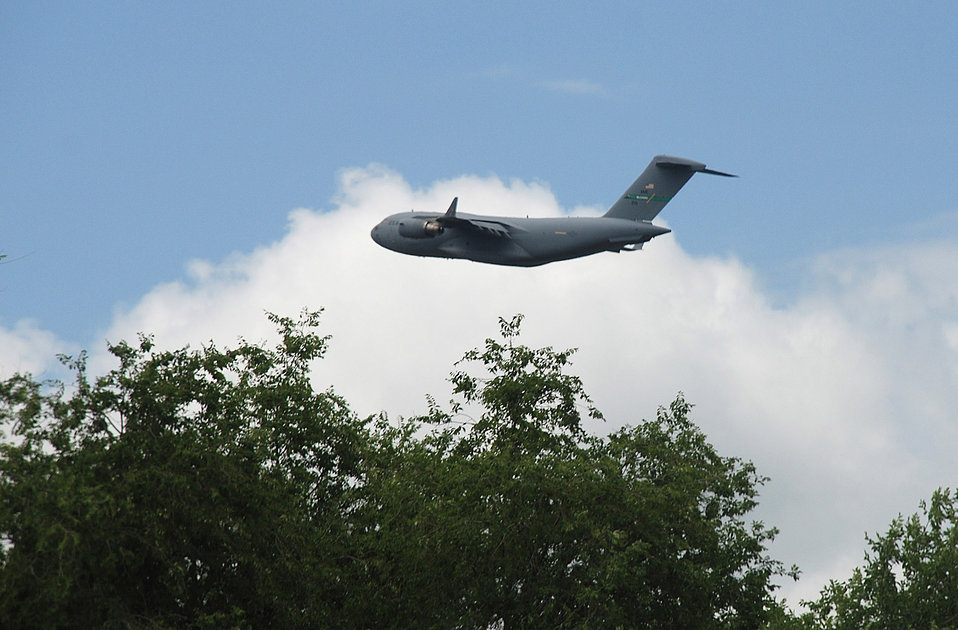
Airpower Summary for June 11, 2007

A U.S. Air Force C-17 Globemaster III, assigned to 817th Expeditionary Airlift Squadron Detachment 1 at Manas Air Base, Kyrgyz Republic, takes off from Manas Air Base for a mission. Coalition C-17s and C-130s flew 141 airlift sorties delivering 1.2 million pounds of cargo June 11.